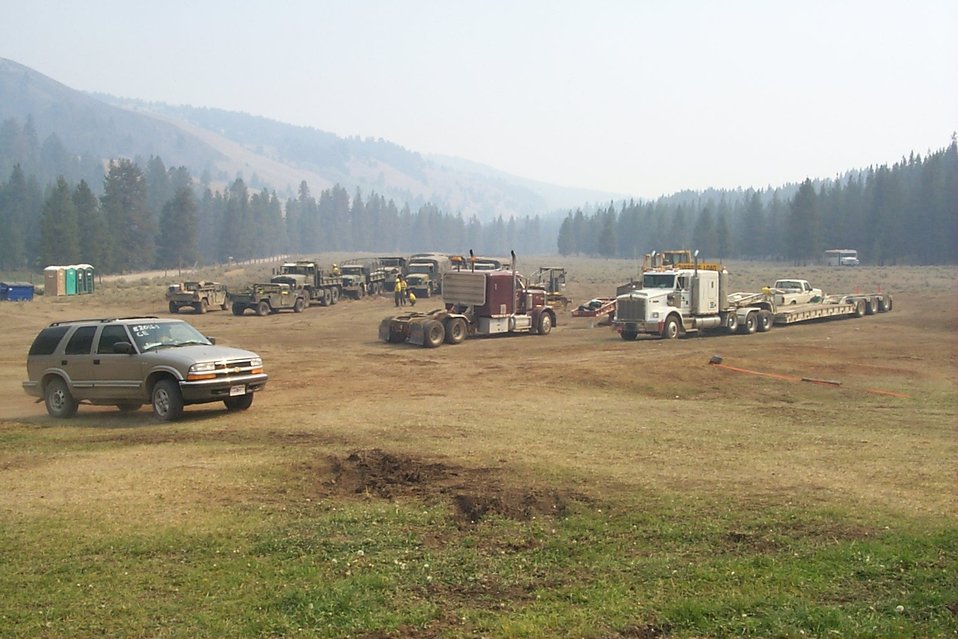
Vehicles Fire Clearwater Fire Salmon Field Office USRD Upper Snake River District